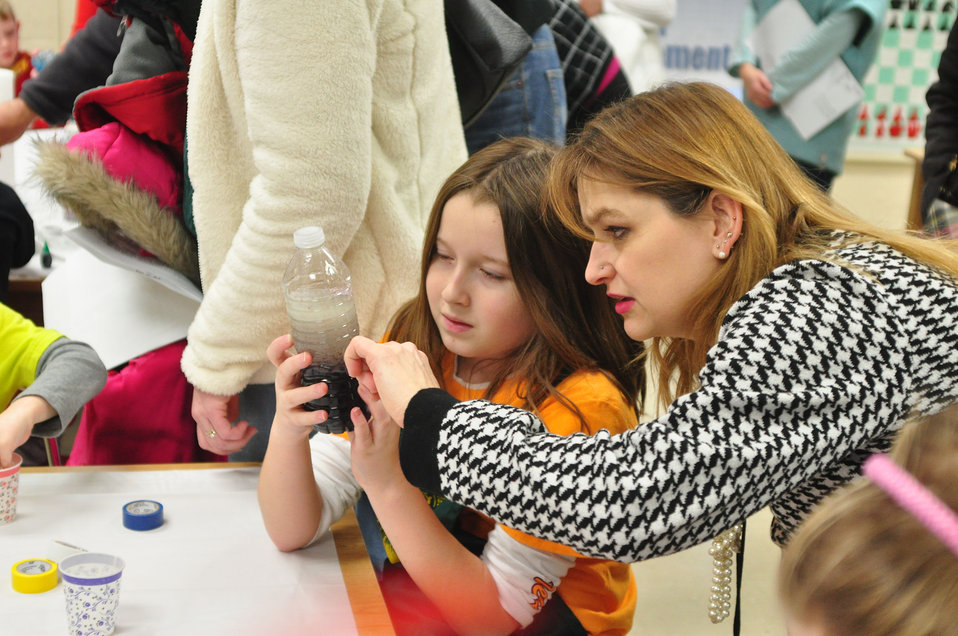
Woodland School STEM Night Oak Ridge 2014

14-013 DOE photo Lynn Freeny 1-23-2014 Oak Ridge Tennessee